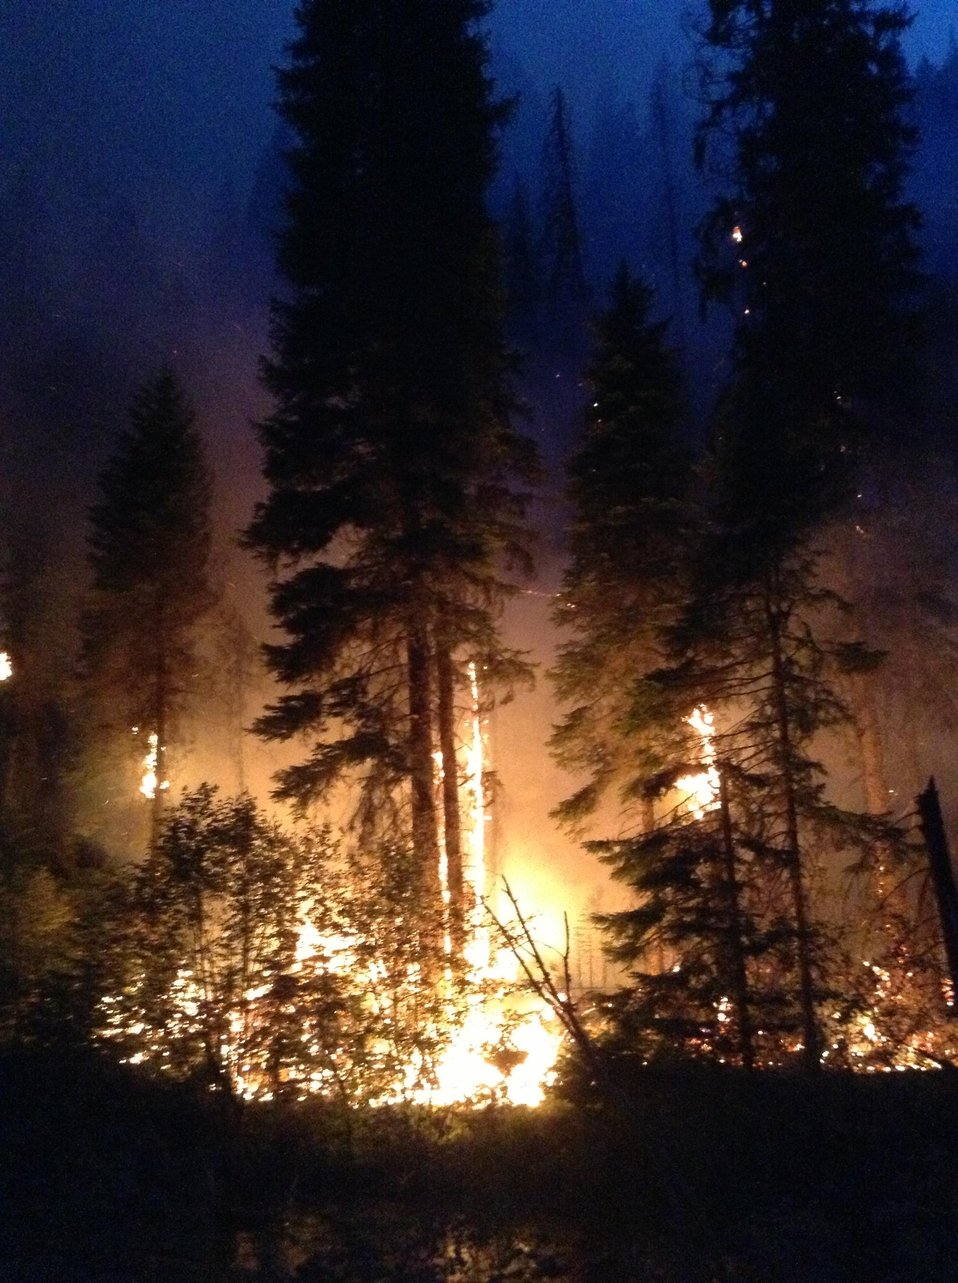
The Gold Pan Fire in the Bitterroot National Forest near Conner, MT began by lightning on Jul. 16, 2013 by lighting have consumed approximately 17,163 acres.